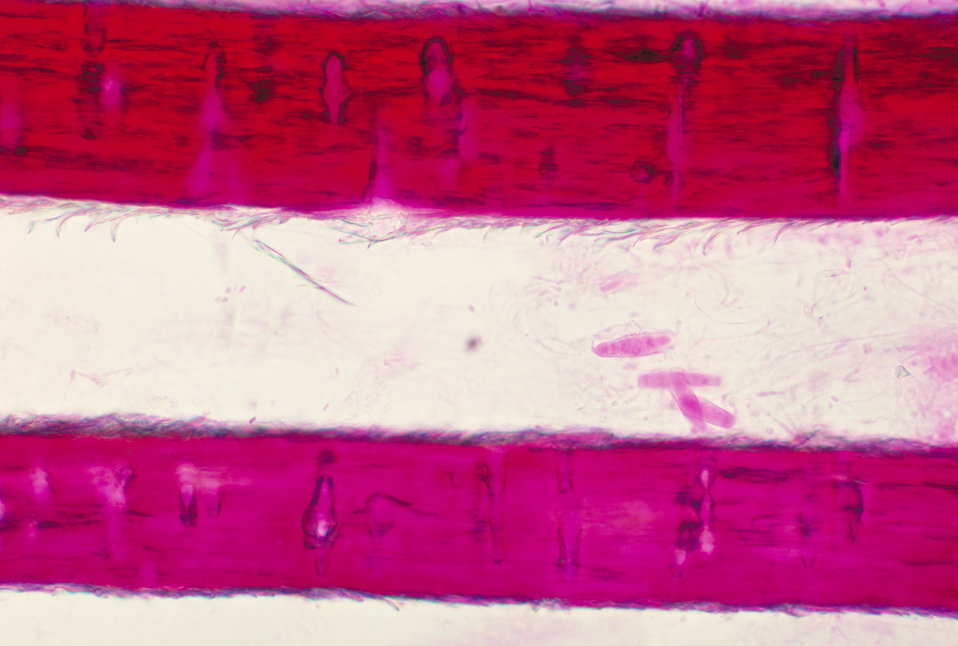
This photomicrograph shows evidence of the fungus Trichophyton mariatii during a hair perforation test.